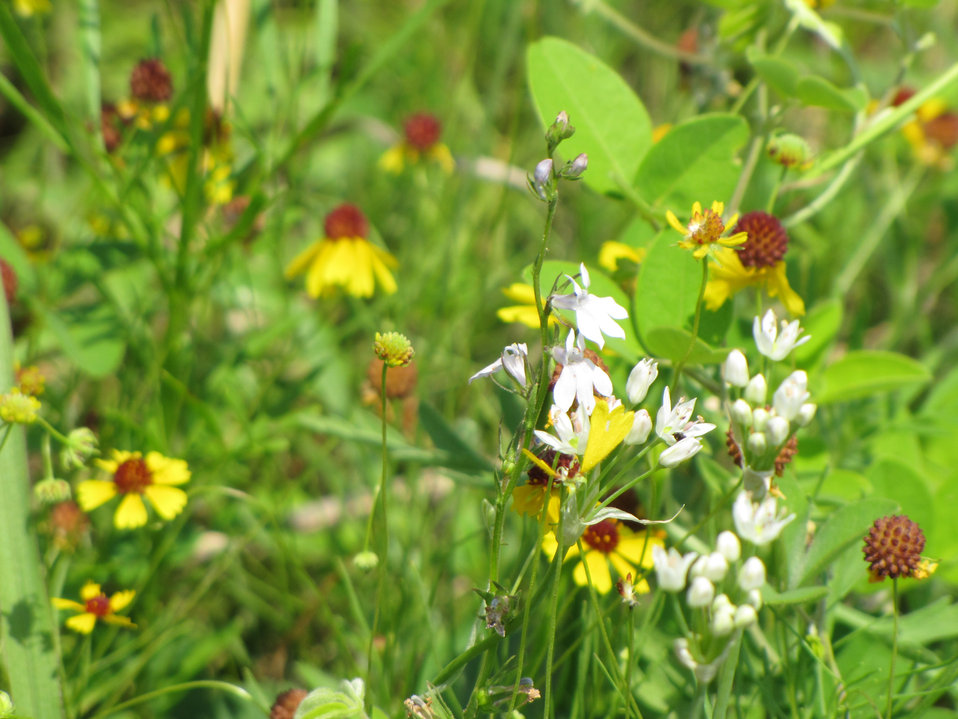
Coneflowers and mixed spring flowers

Wildflowers at Wichita Mountains Wildlife Refuge in Oklahoma.